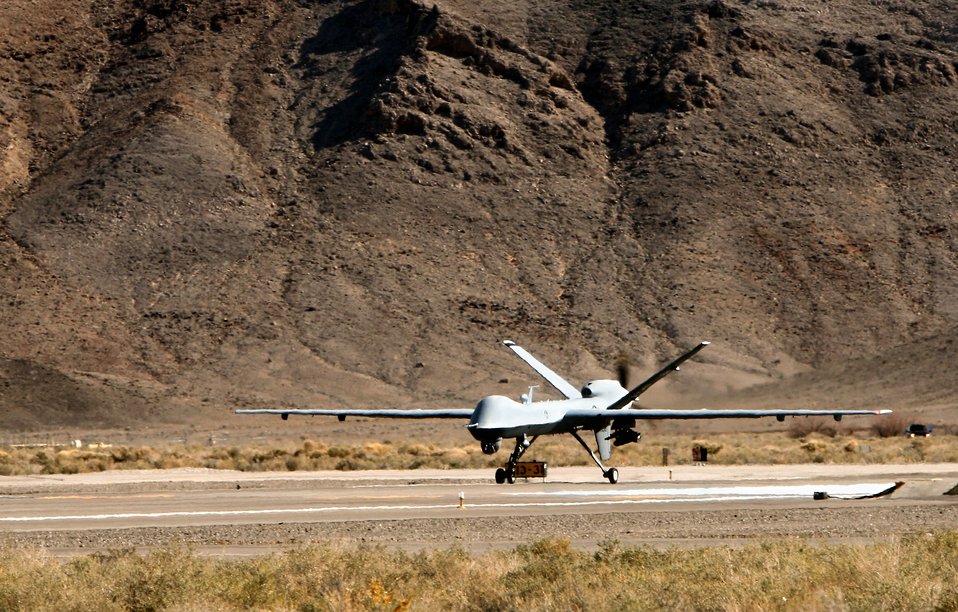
Ready to go

A MQ-9 Reaper prepares to launch Feb. 28 from Creech Air Force Base, Nev.. The Reapers arrived at the base in March 2007.